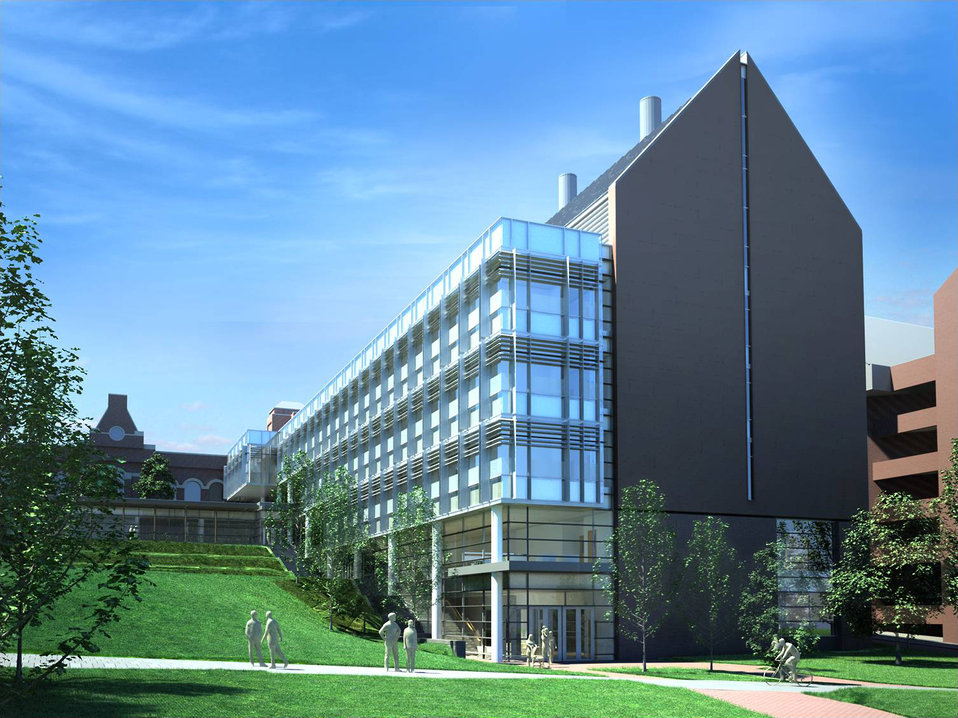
Recovery Act Grant; Georgetown University

Rendering of the proposed Science Research Building at Georgetown University.